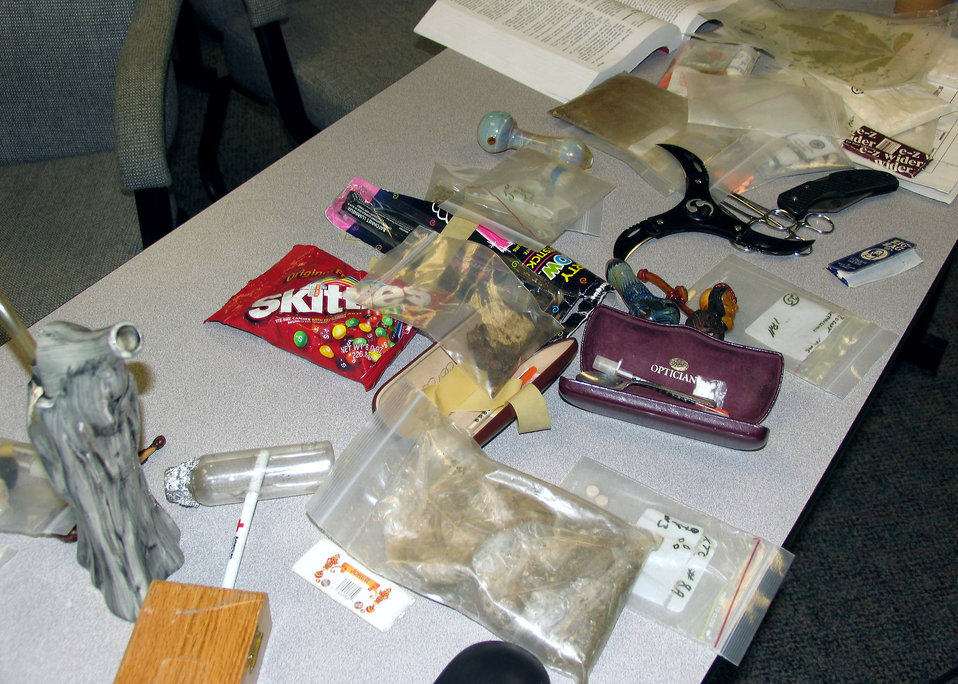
Hanscom Airmen learn how to identify drugs to fight crime

A table displays pipes, baggies of cocaine, heroin and marijuana, needles, and various knives for 66th Security Forces Squadron Airmen attending a drug familiarization training session Sept. 17 at Hanscom Air Force Base, Mass. All of the table's contents were confiscated by Saugus, Mass., police officers during drug arrests. The course was taught by a narcotics detective from the Saugus Police Department.